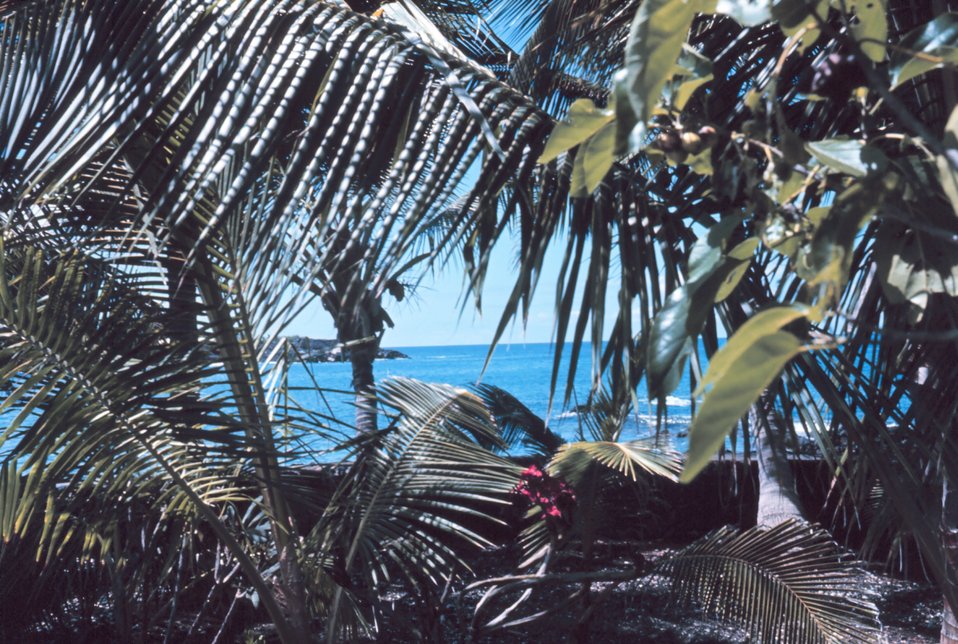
A view towards the deep blue sea through Hawaiian flora.